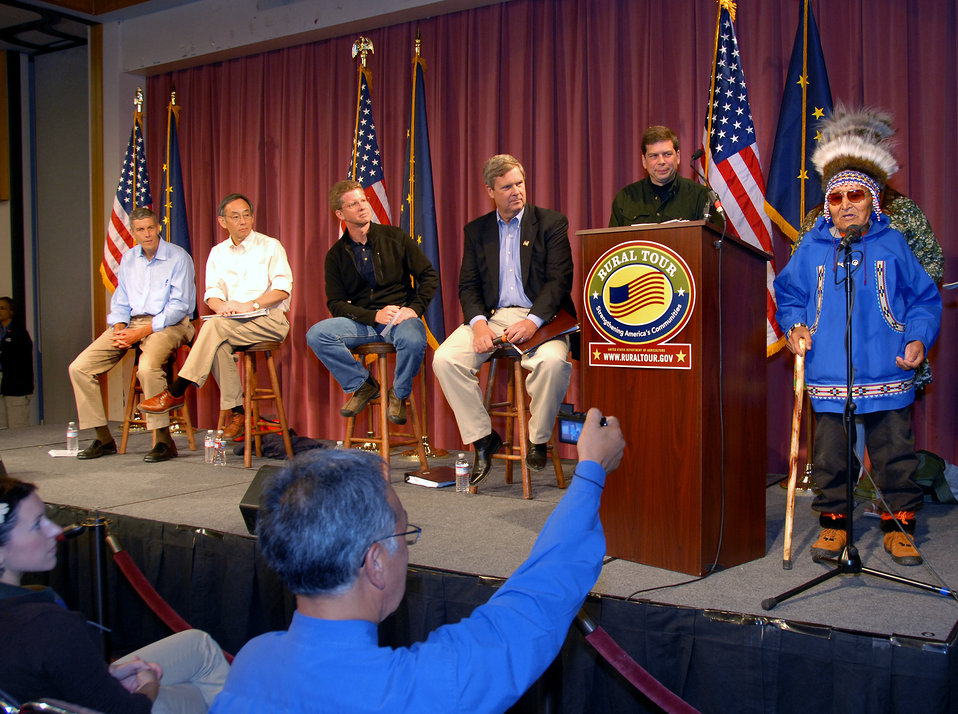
Rural Tour 0051

Rural Tour Alaska Aug 2009